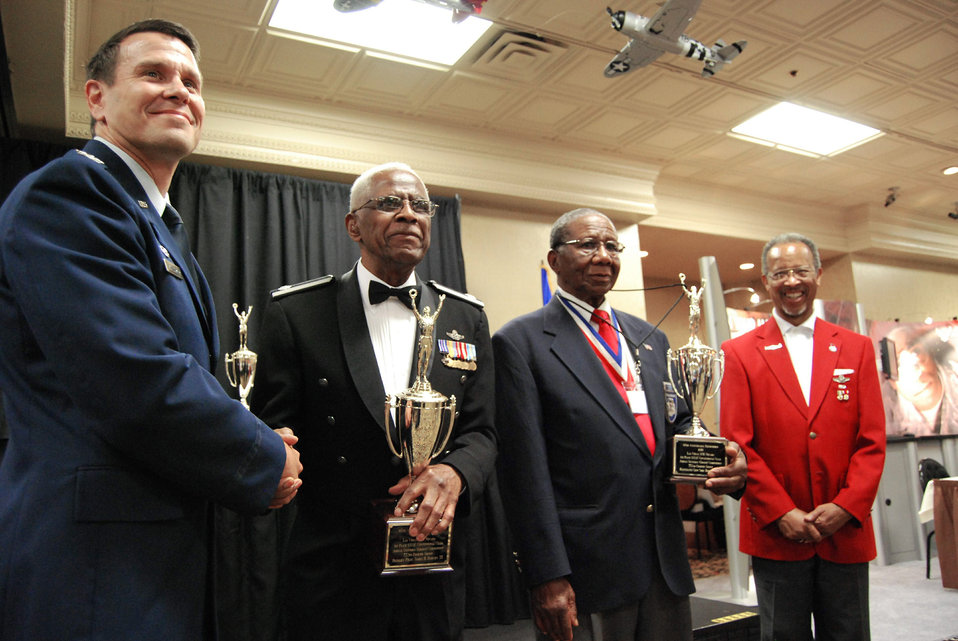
Lt. Col. James Harvey, won early weapons competition as Tuskegee Airman.